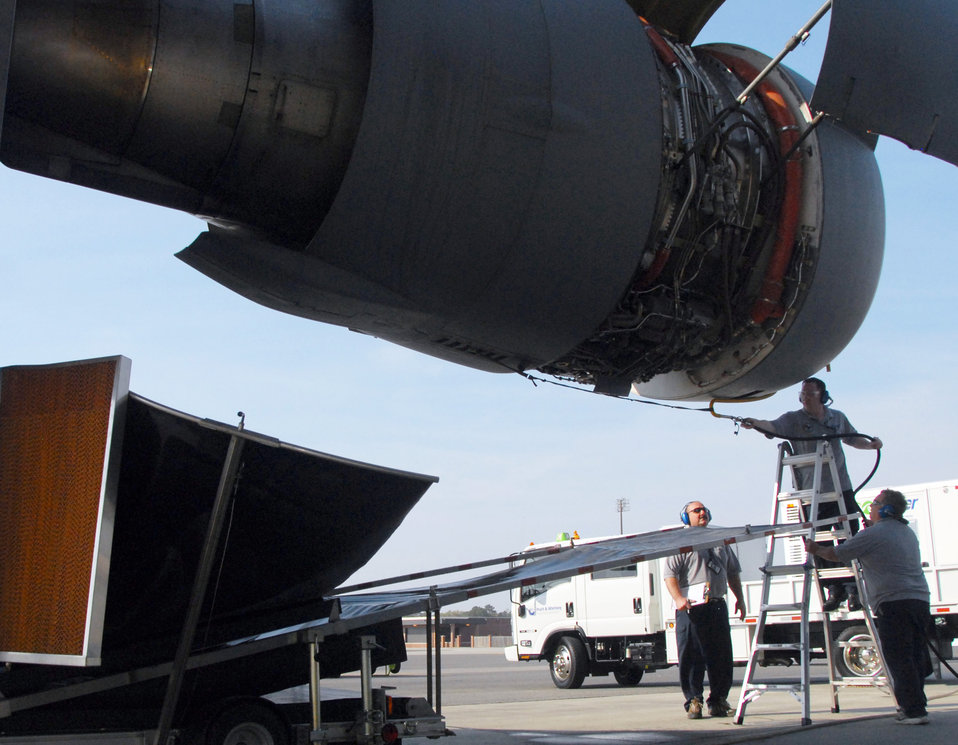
AMC goes green with aircraft engine washes

Contractors wash a C-17 Globemaster III engine with the EcoPower Engine Wash System March 12 at Charleston Air Force Base, S.C. The closed-loop system collects and recycles the runoff water, keeping potentially contaminated water off of the flightline and running off into the surrounding areas.